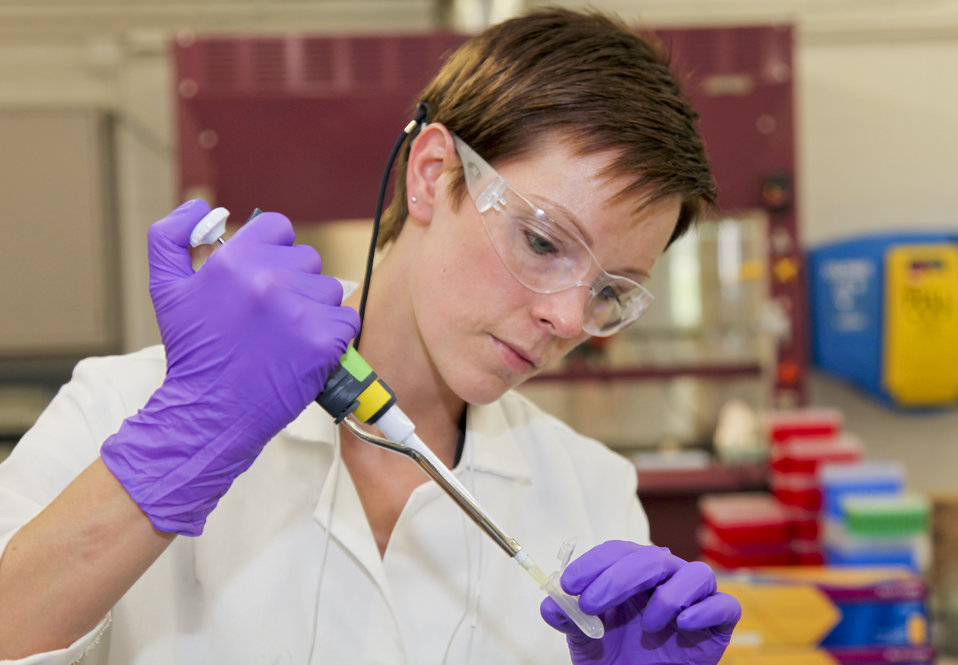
At the Bioenergy Science Center (BESC) offices and laboratories at Oak Ridge National Laboratory, a researcher sets up a QRT-PCR reaction to validate gene expression in a populous transgenic plant.

BESC is a multi-institutional, multidisciplinary research organization focused on the fundamental understanding and elimination of biomass recalcitrance.